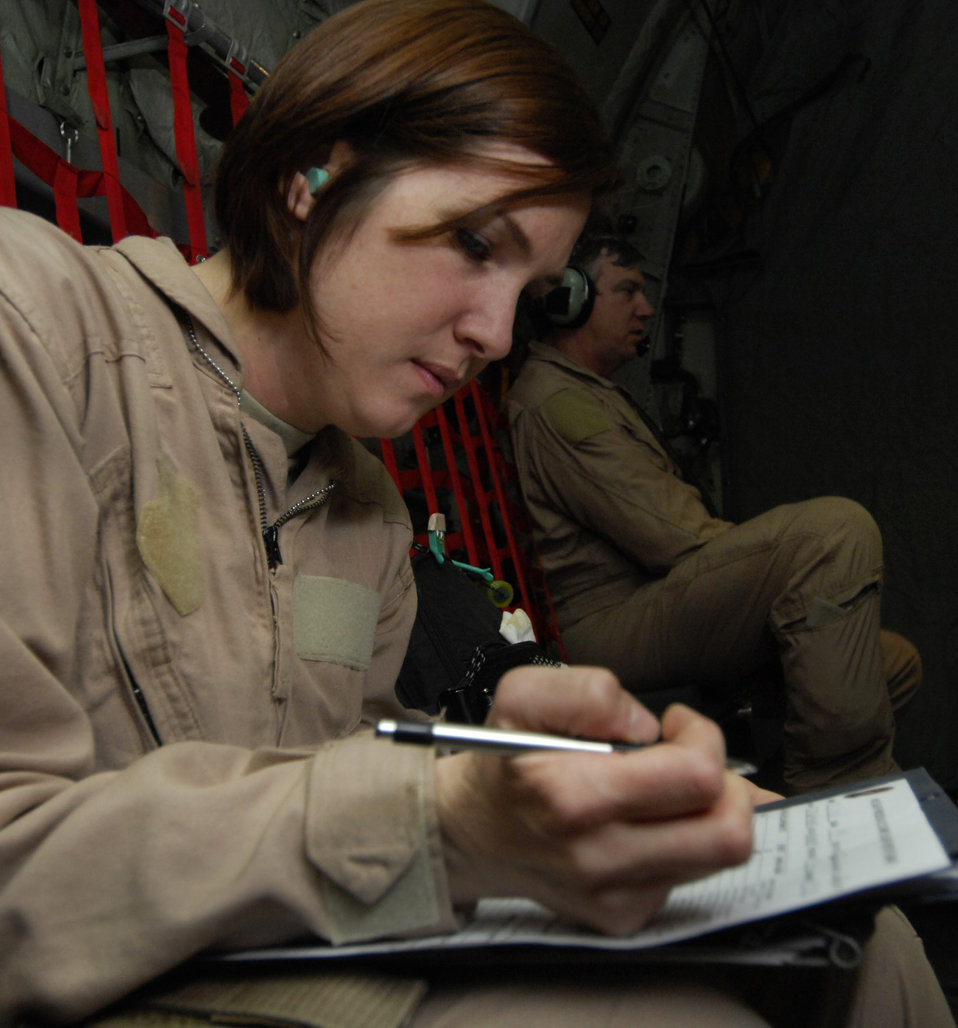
Flight nurse provides care in the air

Capt. Susan McCormick keeps track of a patient's paperwork March 26 during an aeromedical evacuation flight to Bagram Airfield, Afghanistan. Captain McCormick, a flight nurse with the 455th Expeditionary Aeromedical Evacuation Flight at Bagram, is required to keep a log for each patient while enroute to their destination. She is deployed from Westover Air Reserve Base, Mass.